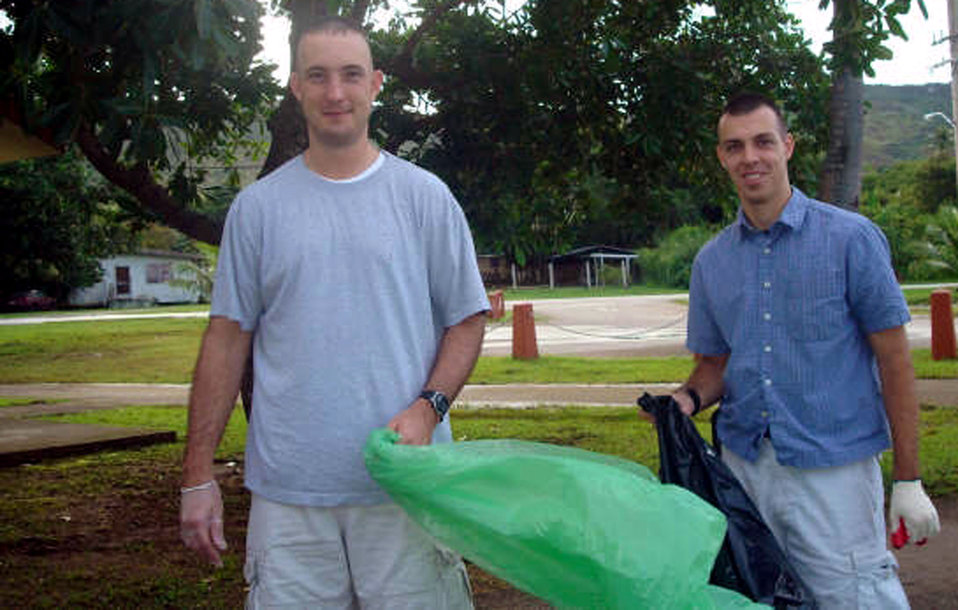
Deployers help support coastal cleanup

Capt. Ken Hills (right) and 1st Lt. Ben Poole participate Sept. 15 in the annual coastal cleanup in Guam. Both are currently deployed to the 20th Expeditionary Bomb Squadron at Anderson Air Force Base, Guam. Eight members of the unit volunteered to spend their off-duty time assisting the local populace during the annual event geared toward preserving the island's natural beauty.